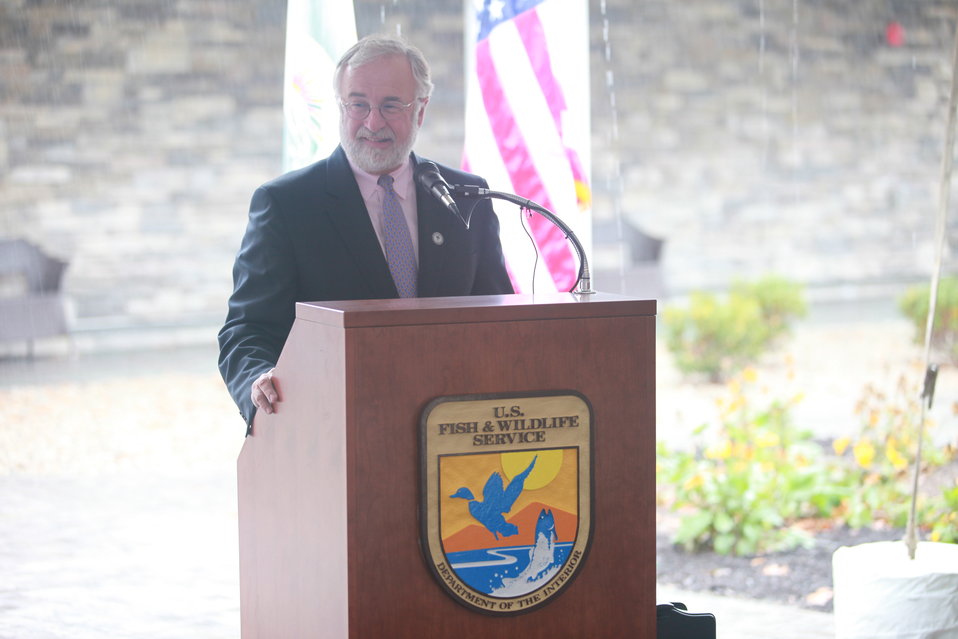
Congressman Timothy Bishop

Congressman Bishop speaks at the Ribbon Cutting Ceremony highlighting the econmomic benefits that such a Visitor center can bring to Long Island and the local community.